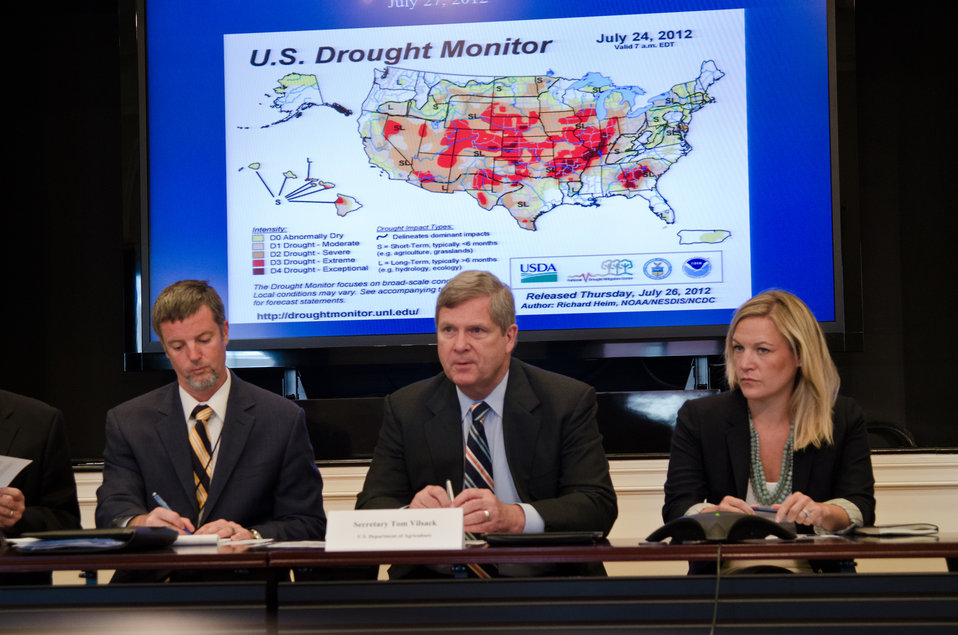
Agriculture Secretary Tom Vilsack chaired a meeting of the White House Rural Council at the Executive Office Building in Washington, D.C. on Friday, July 27, 2012 to update members and stakeholders on the Administration response to the drought and explore ways to assist American farmers and ranchers suffering in its affects. Following President Obama’s instructions of using exiting programs to support struggling farmers and ranchers the U.S. Department of Agriculture’s (USDA) has implemented several processes to assist American farmers and ranchers. USDA has streamlined drought disaster declarations directly from Drought Monitor data, allowed nearly 30 million acres under the Conservation Reserve Program (CRP) to be used for emergency haying or grazing, lowered payment reduction for CRP lands that qualify for emergency haying and grazing in 2012, from 25% to 10%, allowed producers to modify current Environmental Quality Incentives Program (EQIP) contracts to allow for grazing, livestock watering and other conservation activities to address drought conditions, and has authorized haying and grazing of Wetlands Reserve Program (WRP) easement area in drought-affected areas where haying and grazing is consistent with conservation of wildlife habitat and wetlands, and reduced the interest rate for Farm Service Agency (FSA) Emergency loans from 3.75% to 2.25%.